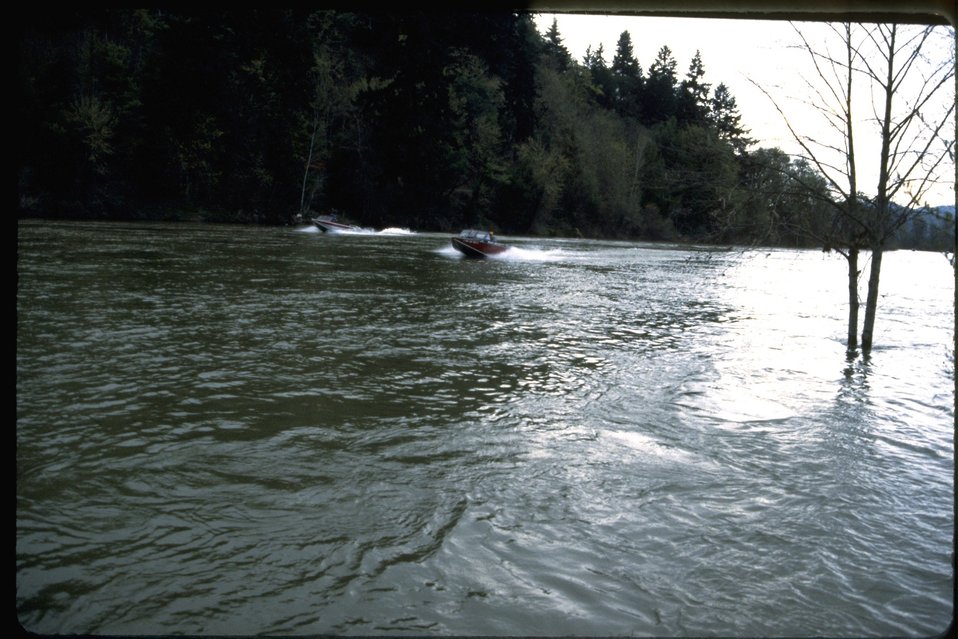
Boats cruising through a small lake or in a large river.